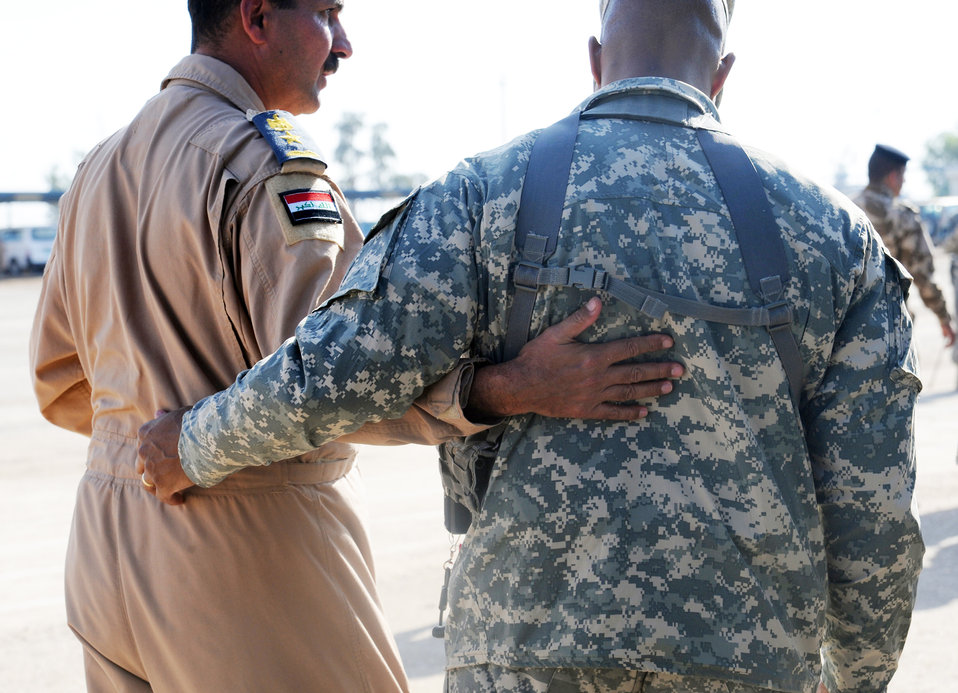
New recruits get a leg up

A U.S. Army servicemember embraces an Iraqi servicemember after a basic military training Top Off course graduation ceremony at the Iraqi Air Force Training School Dec. 28, 2009 at Camp Taji, Iraq. The U.S. Air Force played an advisory role in this completely Iraqi-led air force training course.